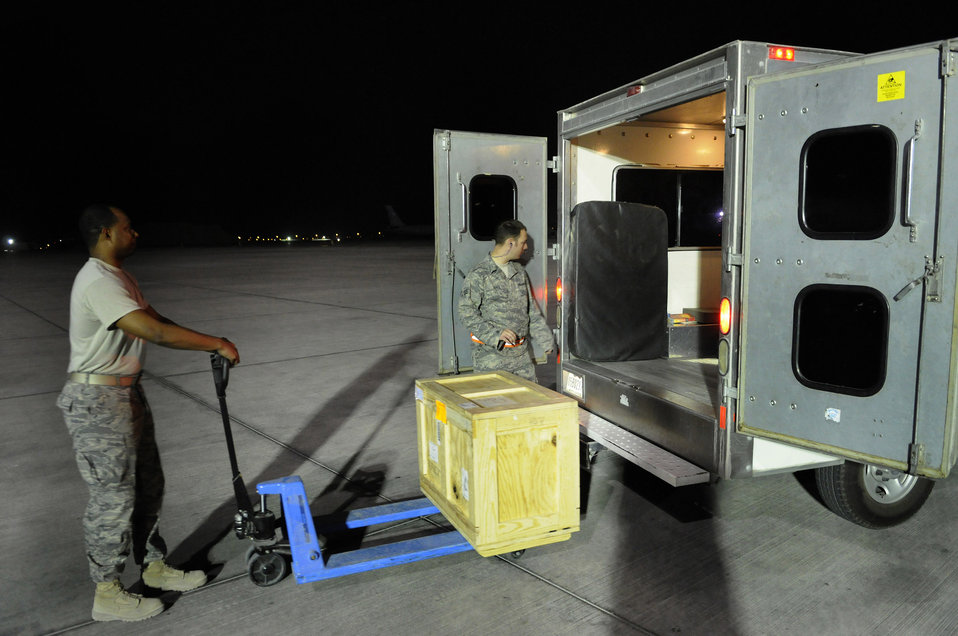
Parts to go

Staff Sgt. Daniel Harrington (left) delivers an aircraft part to Senior Airman Adam Hall Dec. 28 on the flightline of an air base in Southwest Asia. The supply team runs the consolidated aircraft parts facility, a collocated facility where all maintenance teams can go to pick up items needed to fix their specific aircraft. Sergeant Harrington is supply journeyman assigned to the 379th Expeditionary Logistics Readiness Squadron. Airman Hall is an aircraft maintenance journeyman assigned to the 379th Expeditionary Aircraft Maintenance Squadron.